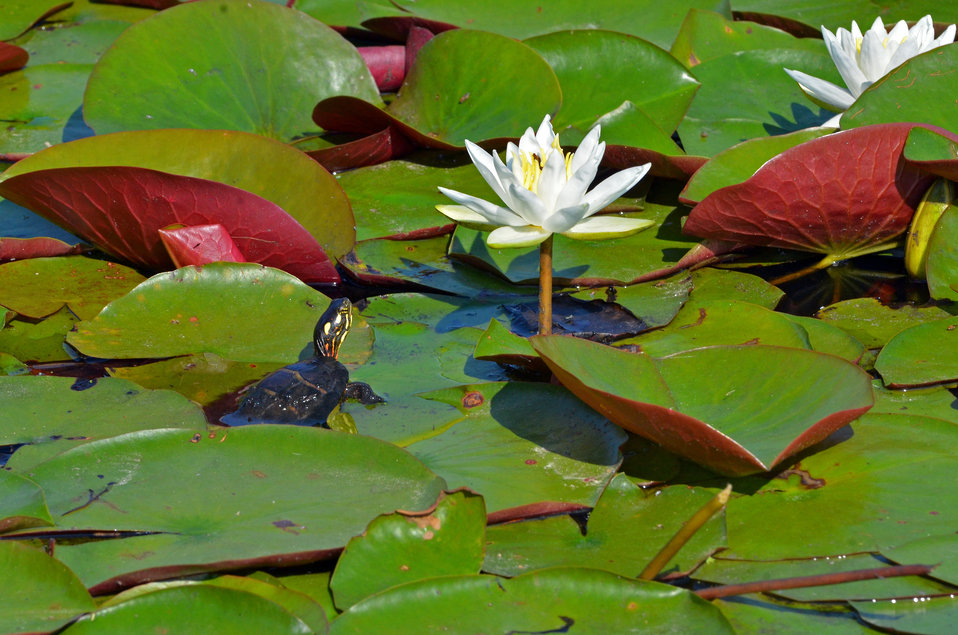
Painted turtle on lily pad

Edwin B. Forsythe National Wildlife Refuge, NJ.